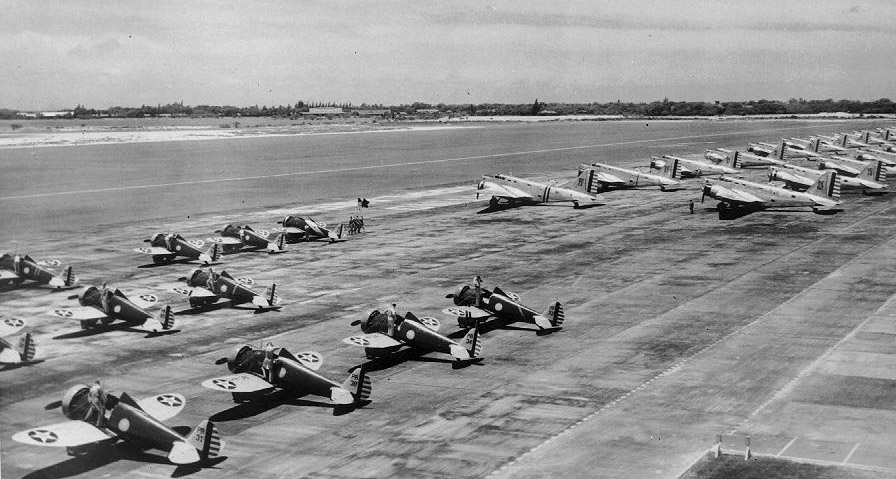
P-26s and B-18s

Boeing P-26s and Douglas B-18s were parked on the ramp at Hickam Field, Hawaii, in January, 1940.